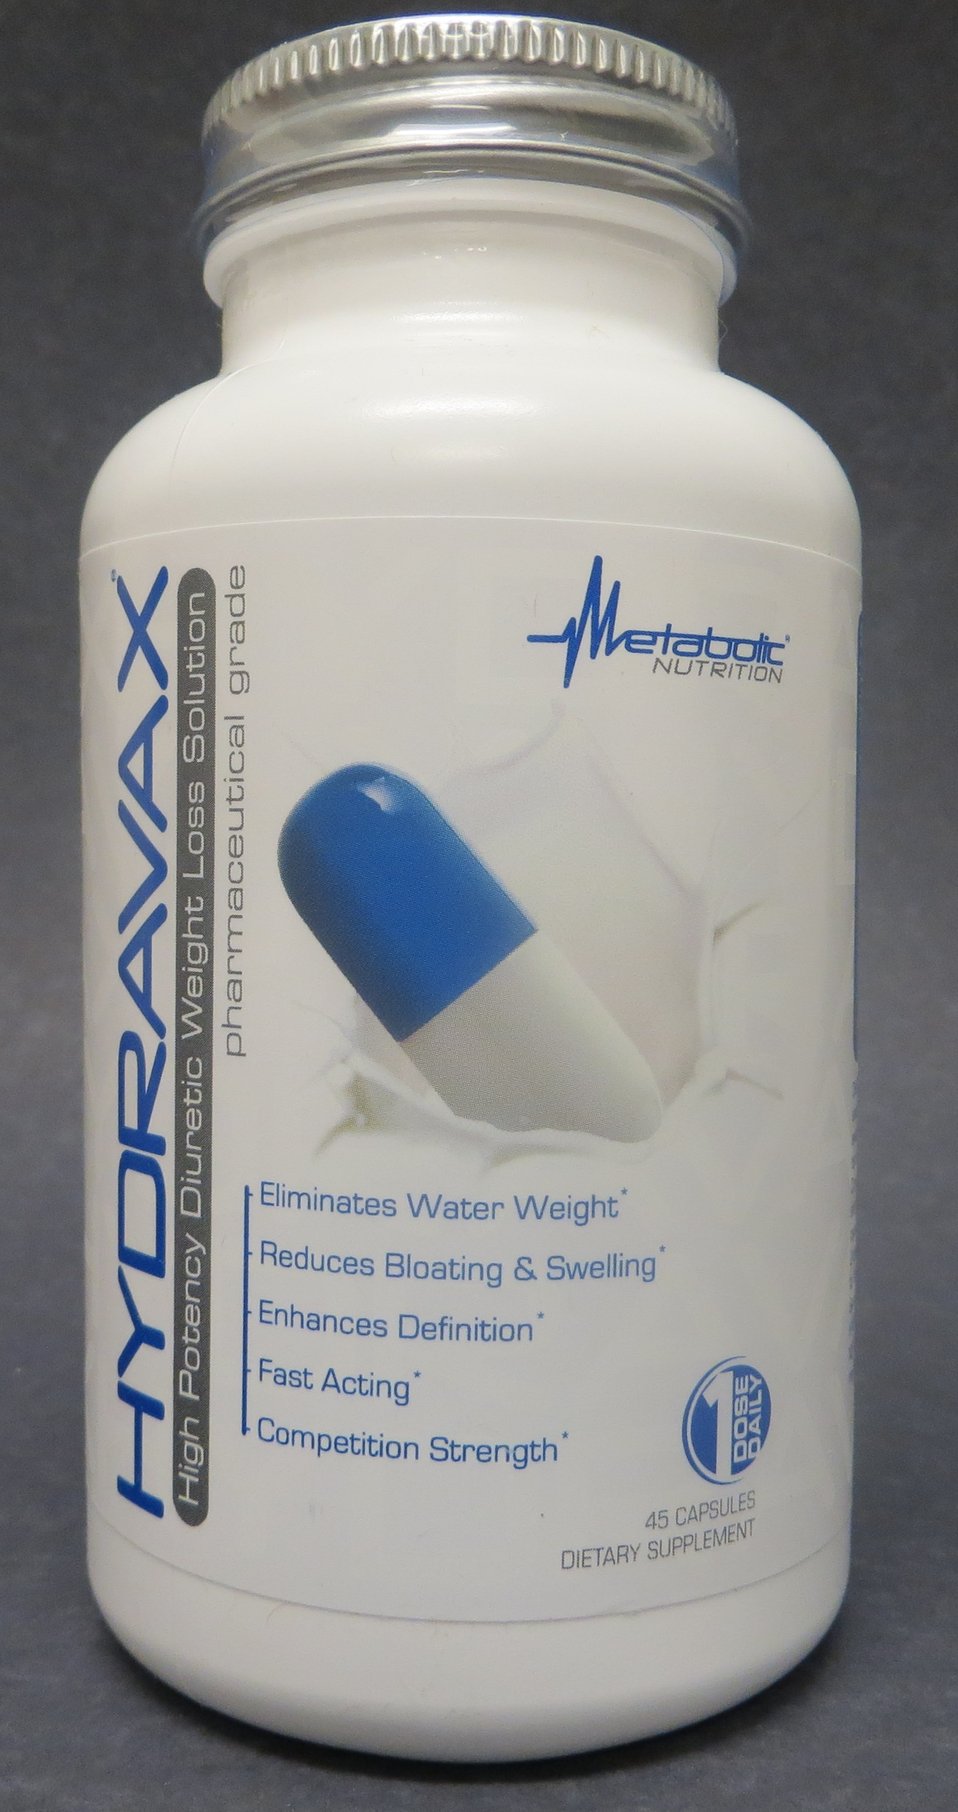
Hydravax

November 29, 2013 - The FDA is advising consumers not to purchase or use 'Hydravax.' The product was found to contain an undeclared diuretic. For more information, go to www.fda.gov/Safety/Recalls/ucm377057.htm

And read this Consumer Update: Beware of Fraudulent ‘Dietary Supplements’